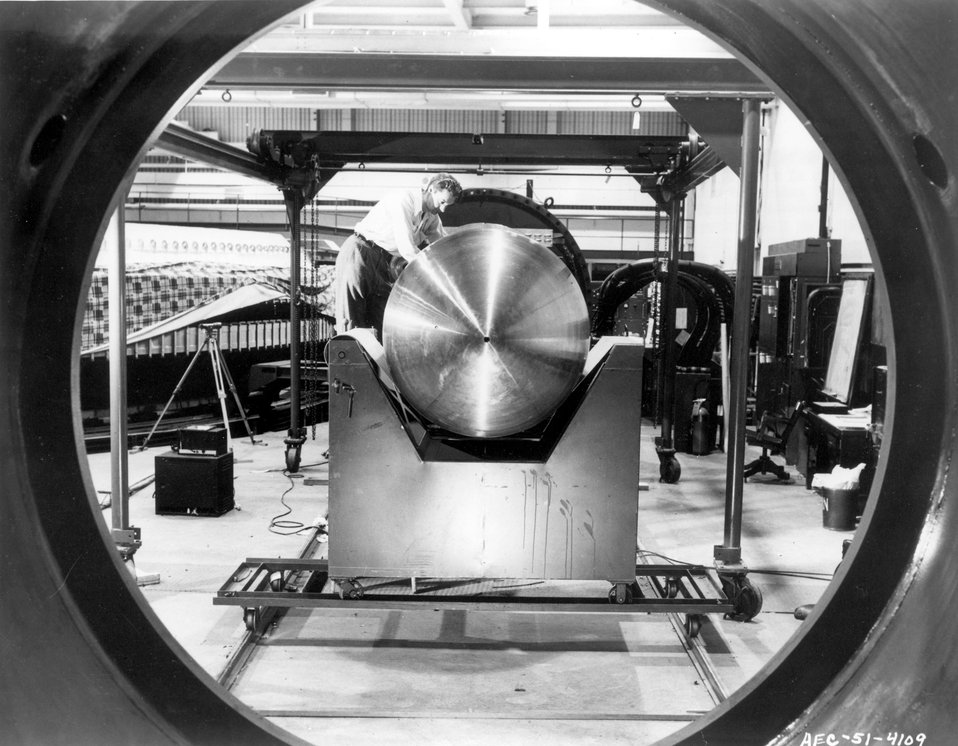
View of the 3.5 million electron volt Van de Graaff generator at the Brookhaven National Laboratory, photographed through the housing of the machine. c. 1951